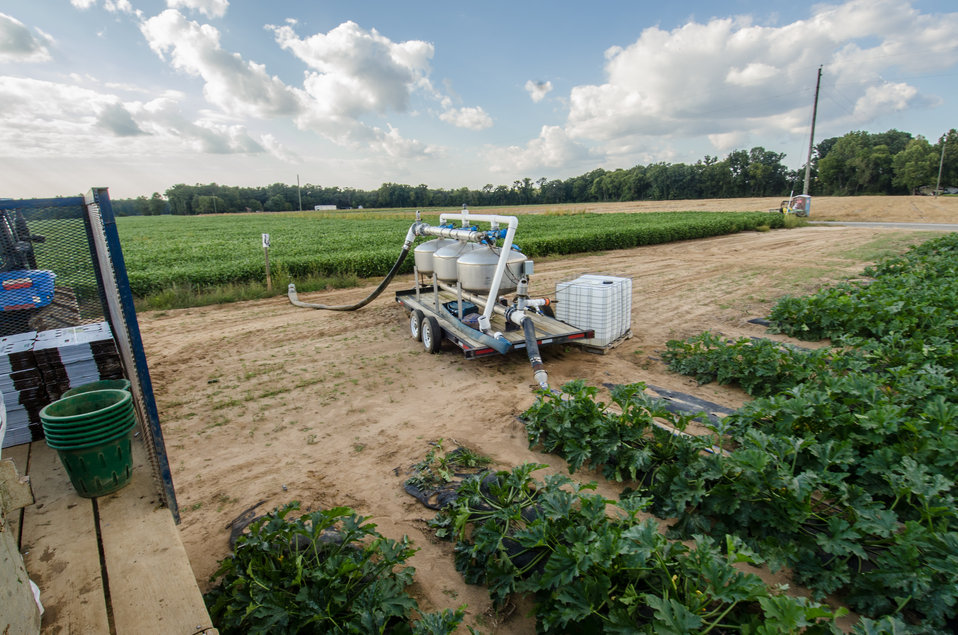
Kirby Farms third-generation family farm in Mechanicsville, VA, uses micro irrigation (drip watering) and plastic mulch (row covering) to efficiently grow green zucchini squash, on Friday, Sept 20, 2013. Water is pumped through a filtration/regulator system to flexible distribution pipes and hard connectors. Emitter hoses can be driven in where needed. Pressurized hoses emit water at a very slow rate near the base of the plants. Computers or timers provide additional controls. A micro irrigation system, also known as drip or trickle irrigation, is used to water directly to the plant root zone utilizing surface or subsurface applicators. For more information please see www.nrcs.usda.gov/Internet/FSE DOCUMENTS/nrcs141p2 024038...
Plastic sheeting is a form of mulch. It conserves soil moisture and reduces energy
use associated with irrigation, moderates soil temperature, provide erosion control, suppresses weed growth, facilitates the establishment of vegetative cover, improves soil quality, and reduces airborne particulates.